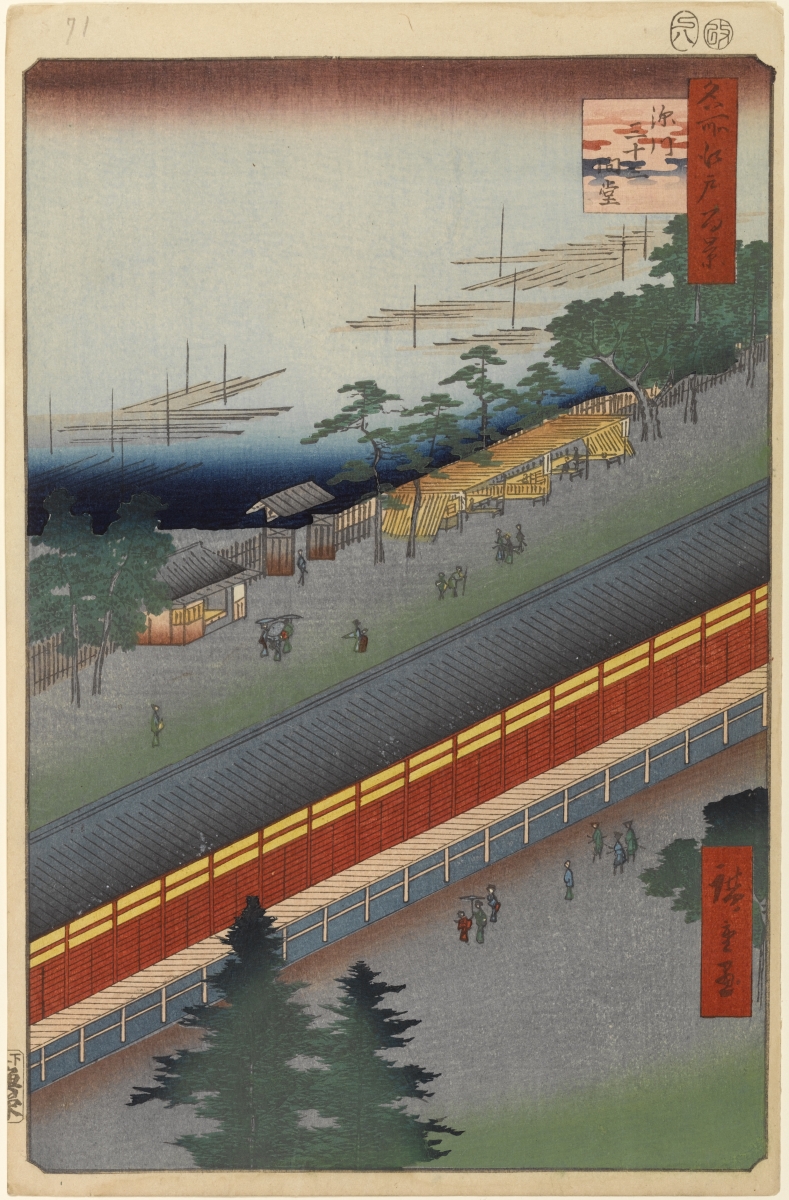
100 views edo 071